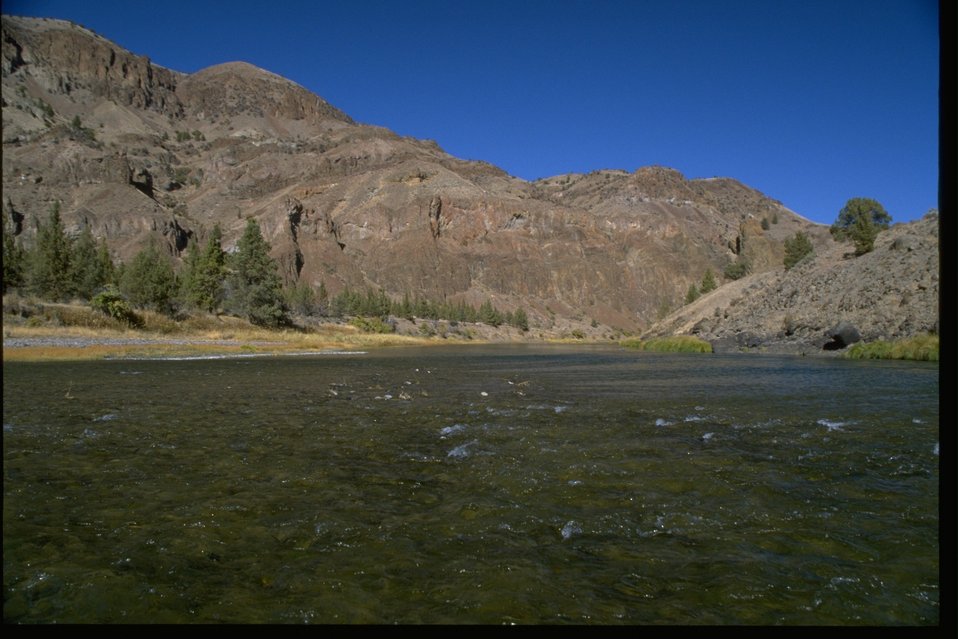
Large cliffs and juniper above shallow rapids (350cfs) in the John Day River.